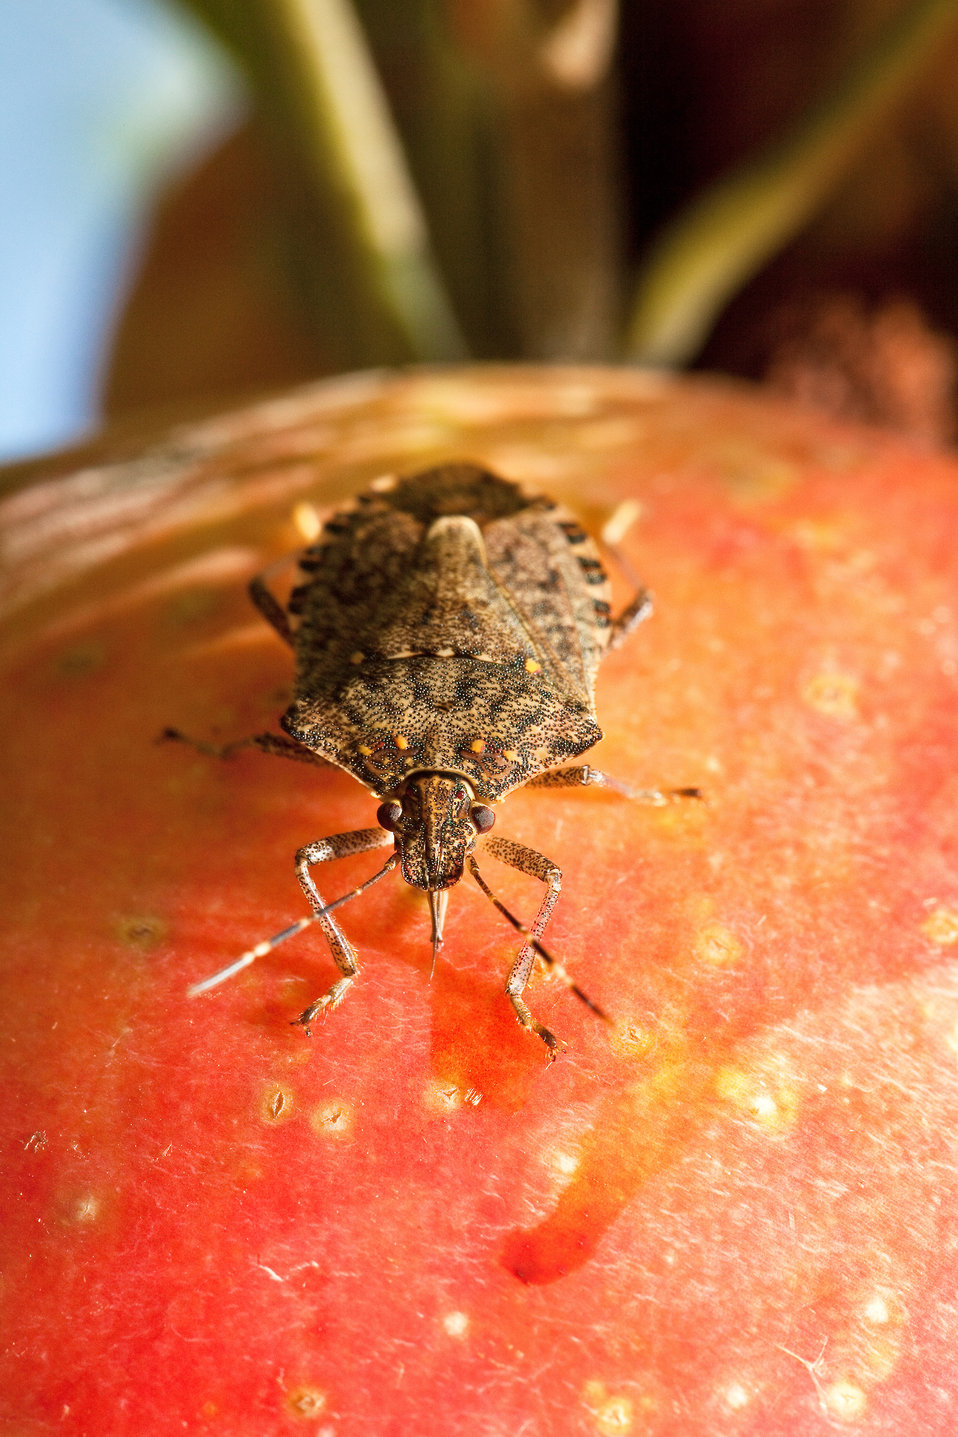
The brown marmorated stink bug shown here is feeding on an apple on Aug. 29, 2012. This pest is a major economic threat to fruit crops, garden vegetables, and man ornamentals. U.S. Department of Agriculture (USDA) Agricultural Research Service (ARS) scientists are fighting back by developing traps, sequencing the bug’s genome, and testing parasitic wasps as biocontrols.